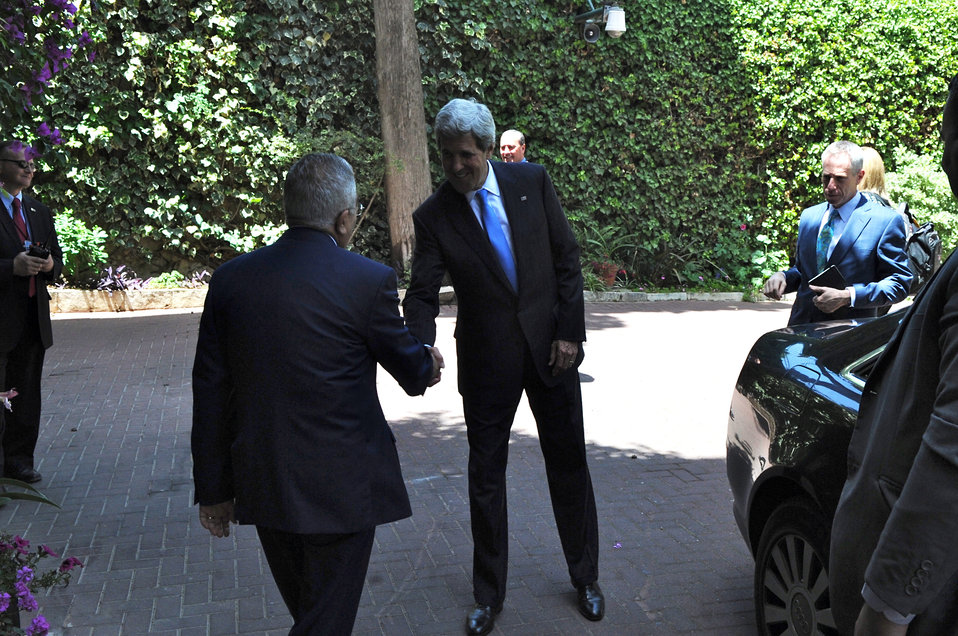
Secretary Kerry Greets Palestinian Authority Prime Minister Fayyad

U.S. Secretary of State John Kerry greets Palestinian Authority Prime Minister Salam Fayyad as he arrives at the U.S. Consulate General in Jerusalem on May 24, 2013.